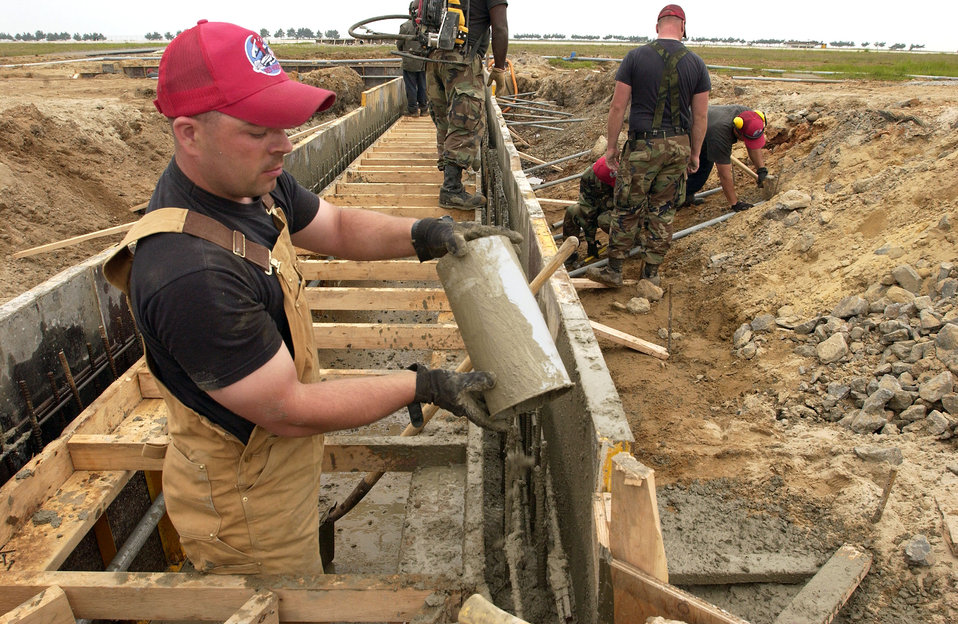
Red Horse squadrons unite in the fight

Staff Sgt. Shawn Vanzandt pours cement at the barrier system on the flightline at Kunsan Air Base, South Korea, on Thursday, May 18, 2006. Airmen from Red Horse squadrons at Nellis Air Force Base, Nev.; Barksdale AFB, La.; Andersen AFB, Guam, and Osan are working September on various quality-of-life improvement projects in South Korea. Sergeant Vanzandt is a heavy equipment operator with Osan's 554th Red Horse Squadron.